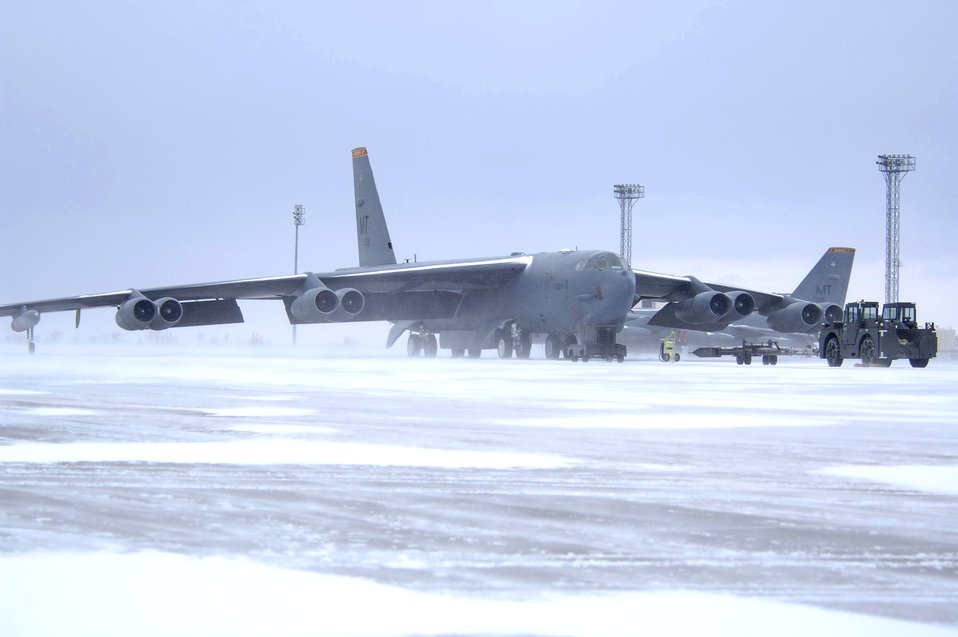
B-52 undergoes synthetic-fuel cold weather testing

A B-52 Stratofortress, like these shown, powered by a mix of synthetic fuel arrived at Minot Air Force Base, N.D., Jan. 17 for cold weather testing. This is the the last step in the testing and certification process to help reduce Air Force dependence on imported fuel.